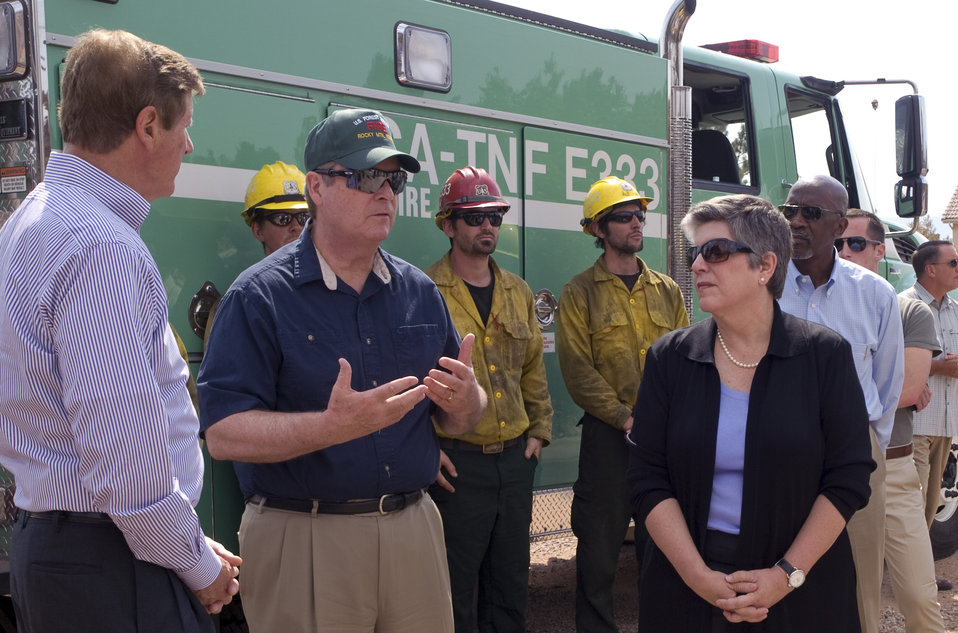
Agriculture Secretary Tom Vilsack (center) and Homeland Security Secretary Janet Napolitano talk with firefighters at the Waldo Canyon Fire near Colorado Springs, CO on Tuesday, July 3, 2012.